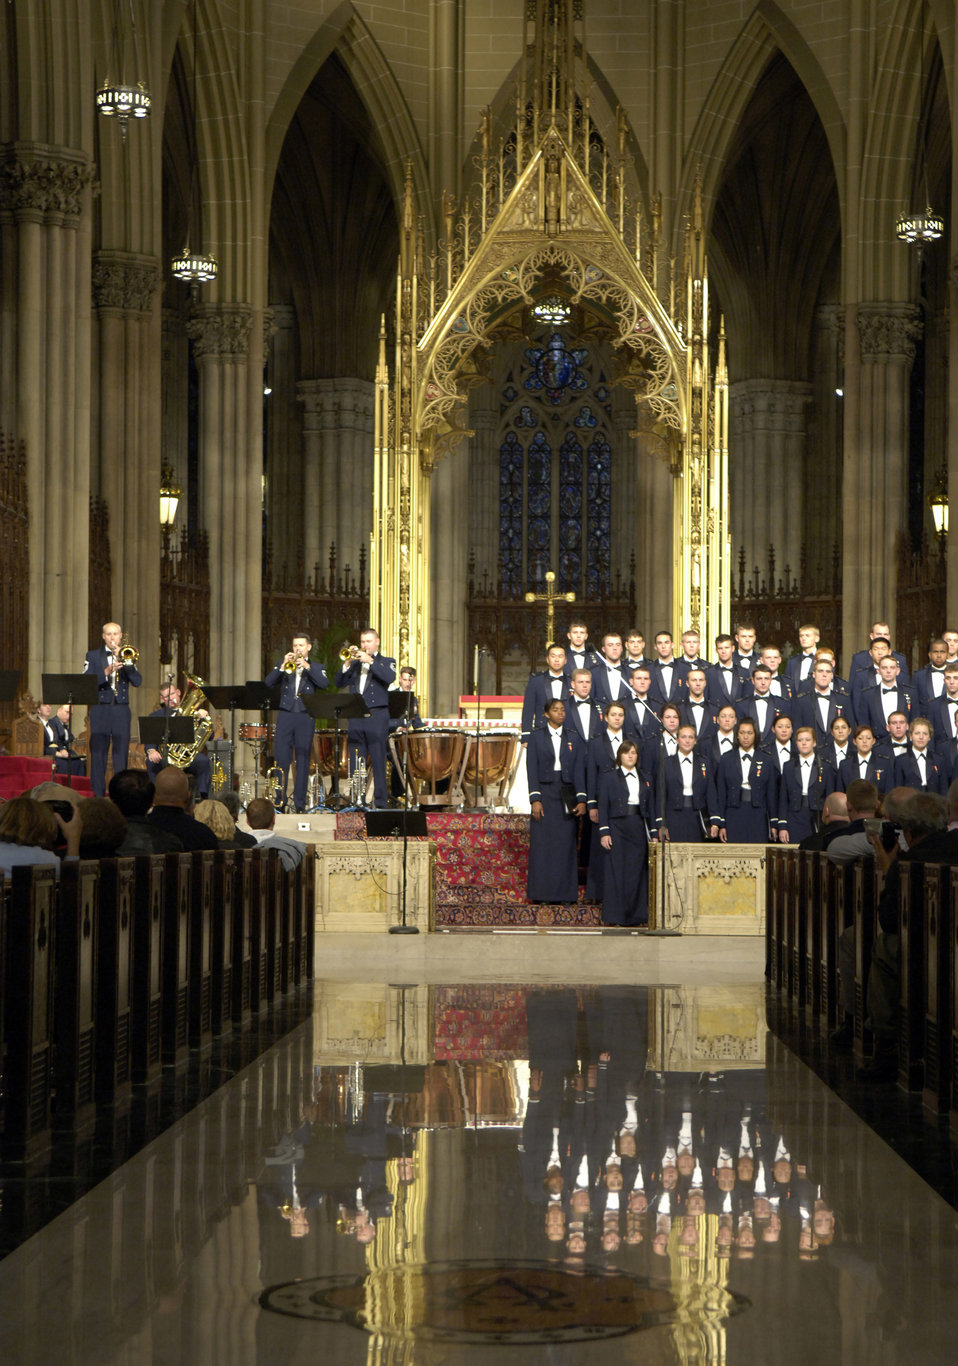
Holiday music

The Stellar Brass Band along with the Cadet Chorale play and sing holiday songs for visitors during a concert at St. Patrick's Cathedral, New York City, Nov. 24.